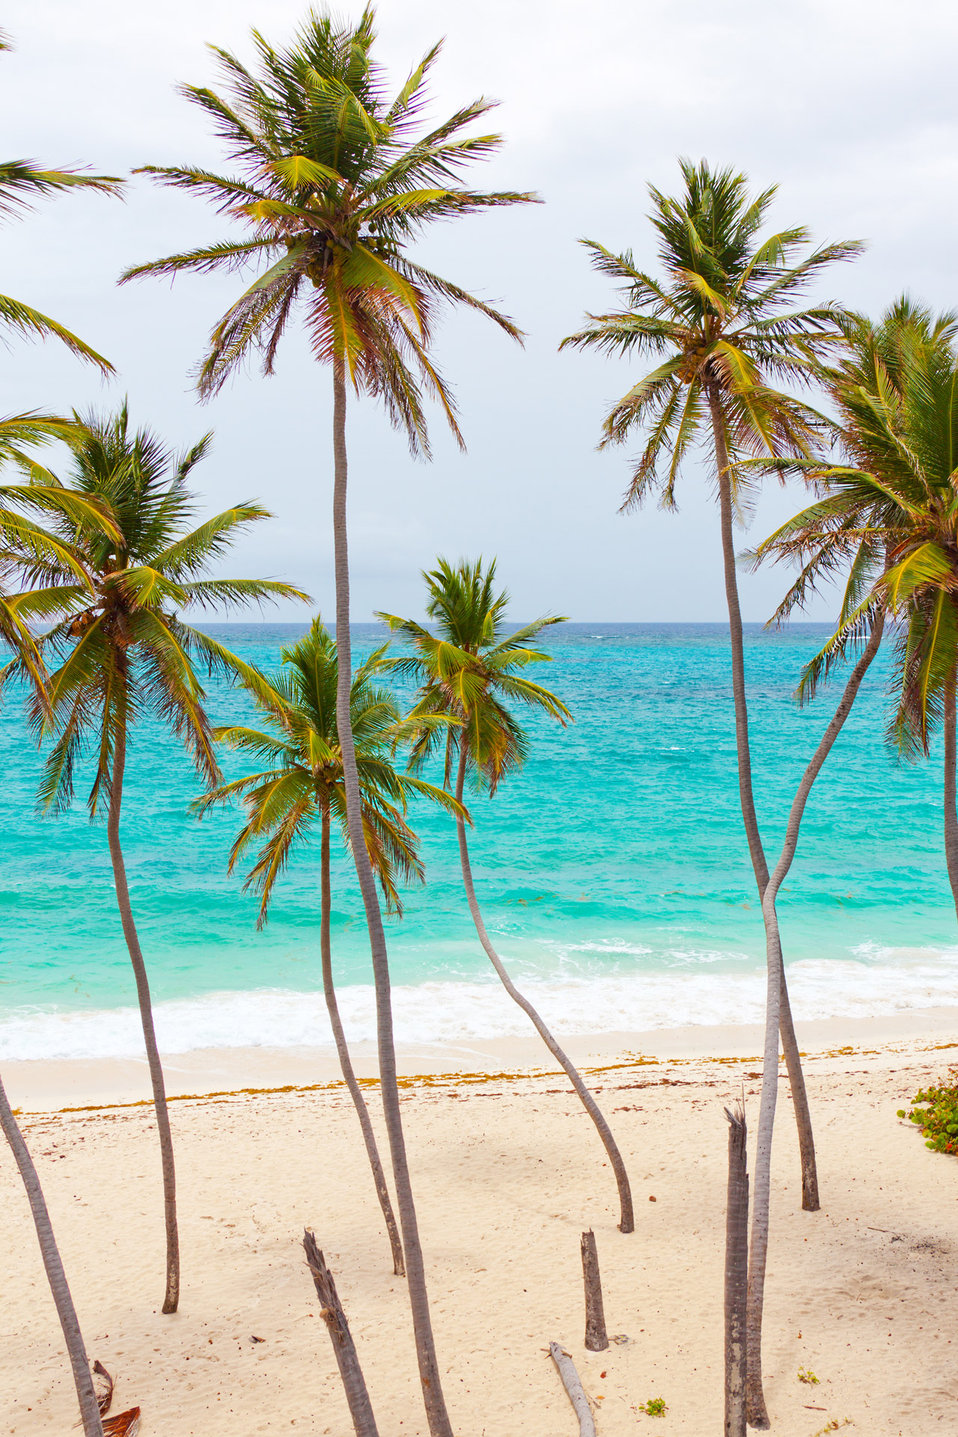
Tropical beach with palm trees

Beautiful tropical beach with palm trees.